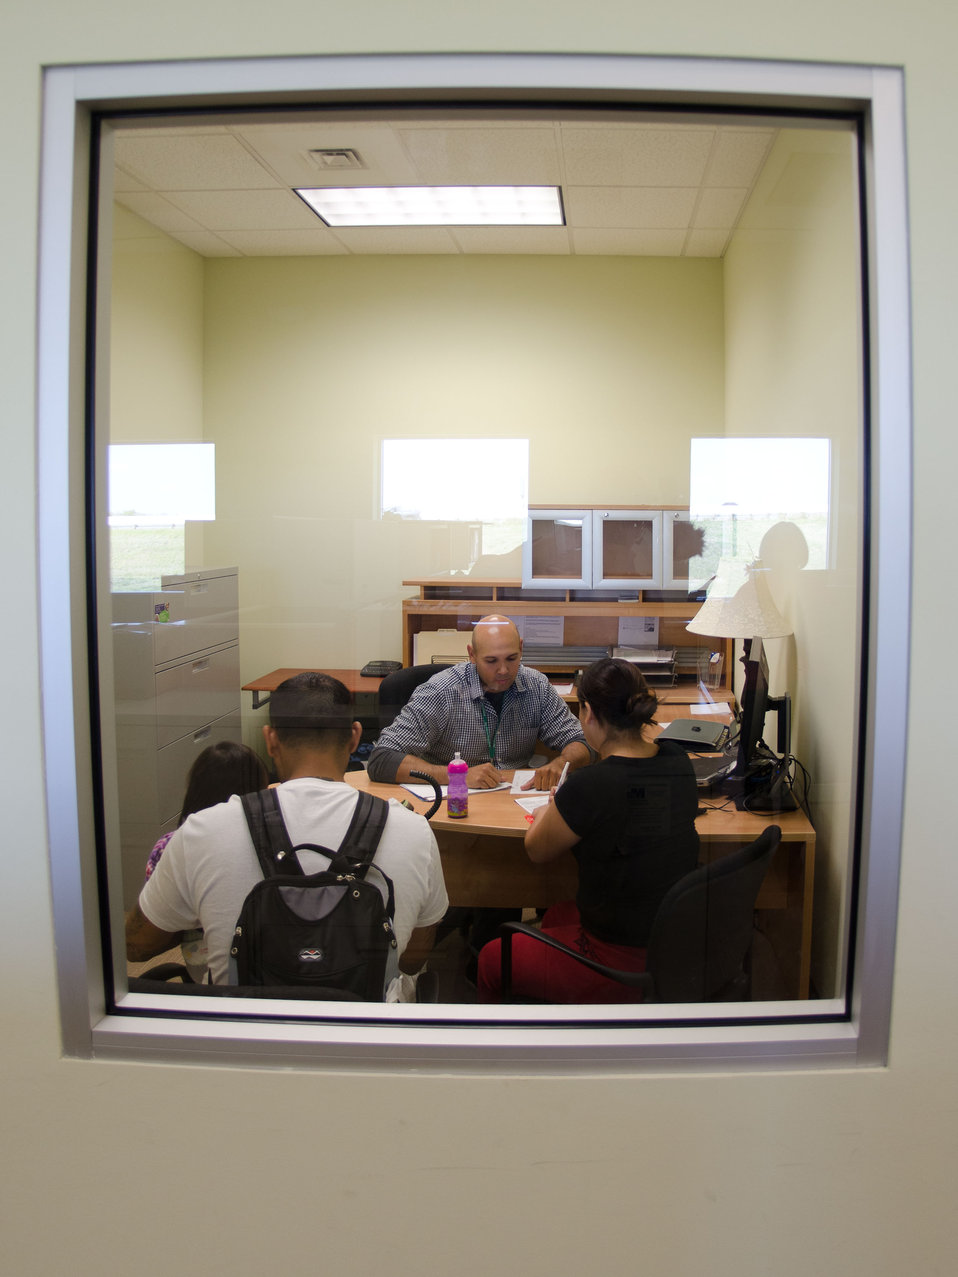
In the privacy of a San Antonio Food Bank (SAFB) Outreach Office, Olivia Hernandez (right), said “You should never be too prideful to ask for assistance …” on Monday, October 31, 2011, when asked about what others should keep in mind when faced with a crisis such as the one Cesar Trevino (left), daughter Lana (1 yr. old) did the prior evening, when an apartment unit caught fire, spreading smoke and flames throughout the building, eventually consuming their Texas apartment. Left with the clothes they are wearing they were referred to the San Antonio Food Bank where they sat down with Outreach Specialist Seth Villalobos (center) who listened and determined what their immediate needs were. Villalobos talked about the programs that could address their needs, and benefits that could help them rebuild their lives. During this initial visit, they applied for Children’s Medicaid and Women, Infants & Children (WIC) benefits, later they were briefed about the United States Department of Agriculture’s Supplemental Nutrition Assistance Program (SNAP) and the Federally funded, state administered Temporary Assistance for Needy Families Benefits (TANF) as well as other Federal and State programs. At the end of their meeting Hernandez said, “It was super-easy, very friendly staff.” And Trevino added, “great service.” Later that day, Villalobos made a personal trip to this family’s temporary home to deliver a box of groceries to make their first evening a little easier. In the box were provisions from the USDA and other contributors to SAFB.
San Antonio Food Bank is a non-profit organization that serves as a clearinghouse by receiving and storing truckloads of donated food, produce, and other grocery. SAFB distribute these items to over 500 service agencies that help people in need.
“We couldn’t do what we do without our partnership with USDA’” said President and CEO Eric Cooper. SAFB serves 16 counties in Southwest Texas and states, “Nearly one out of every four children and one out of every five adults in Southwest Texas lives in poverty and has difficulty meeting basic nutritional needs.” According to SAFB, sixty-five percent of the people requesting emergency food have children. USDA photo by Lance Cheung.
www.fns.usda.gov/fns/
www.fns.usda.gov/snap/ www.fns.usda.gov/fdd/programs/tefap/